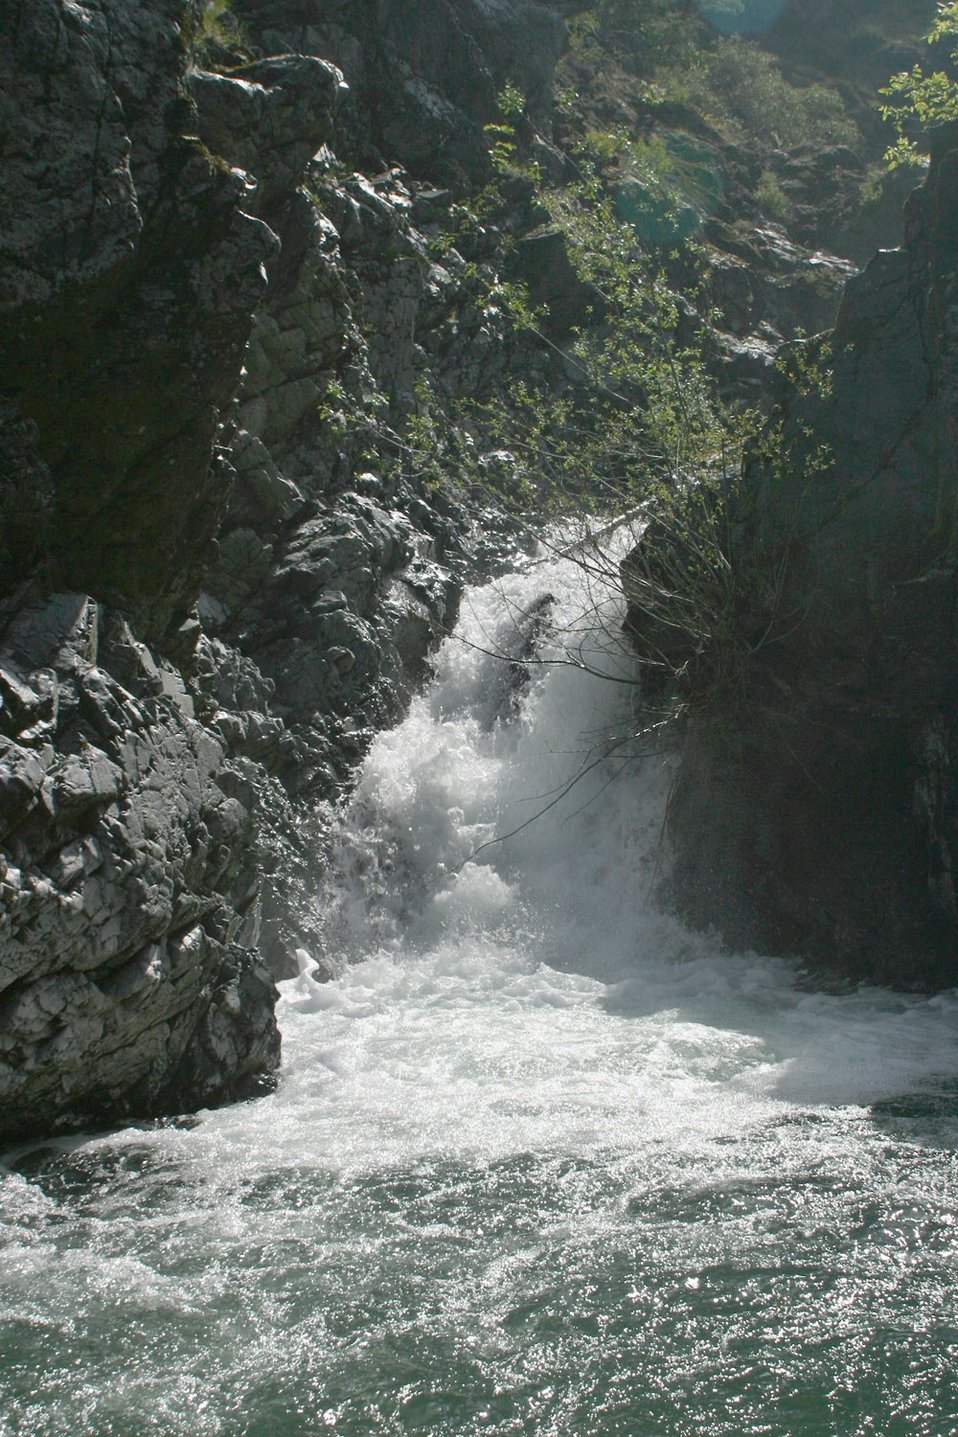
Wild section of the Rogue River from Grave Creek to Foster Bar May 19 to May 22.